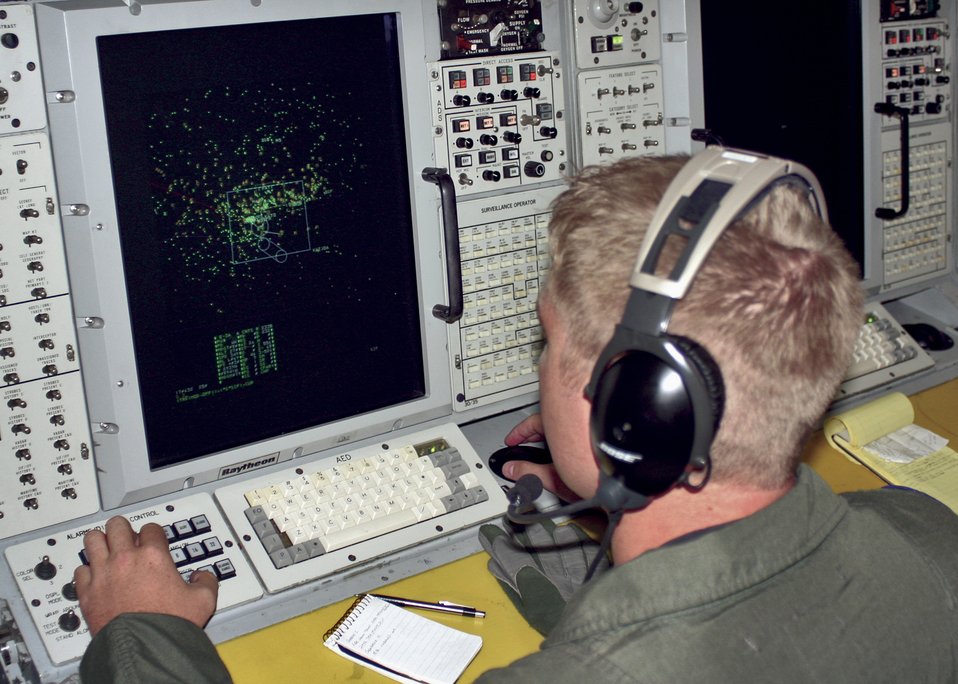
552nd Air Control Wing supports hurricane relief efforts

OVER LOUISIANA -- Senior Airman David Giles keeps track of search-and-rescue aircraft on his radar in an E-3 Sentry airborne warning and control system aircraft Sept. 7. He is an airborne surveillance technician from the 960th Airborne Air Control Squadron at Tinker Air Force Base, Okla.